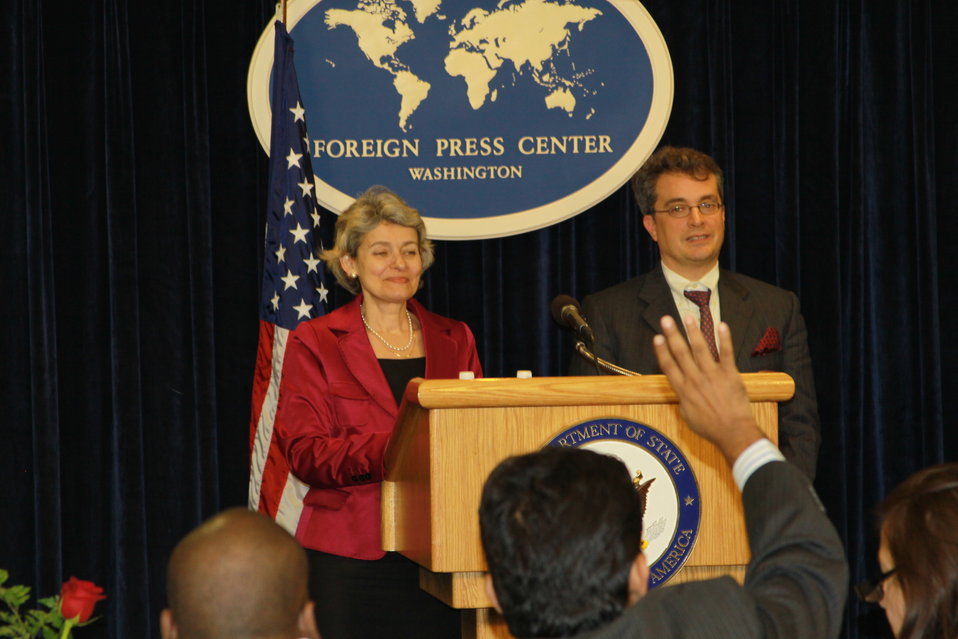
UNESCO Director General Bokova and Ambassador Killion Call on a Journalist

Irina Bokova, Director General for UNESCO, and Ambassador David Killion, U.S. Permanent Representative to UNESCO, call on a journalist who has a question at a luncheon at the Foreign Press Center, as a part of the 2011 World Press Freedom Day Global Conference in Washington, D.C., on May 3, 2011.